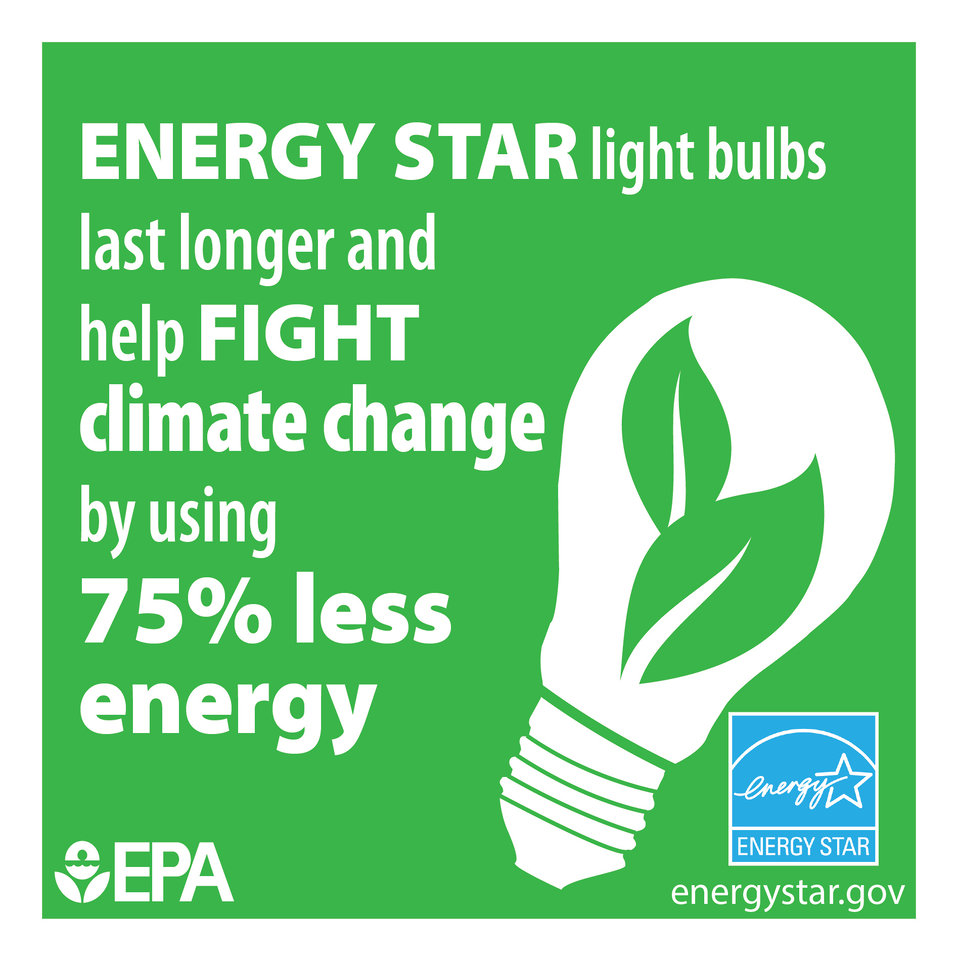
Change Light Bulbs

When it comes to saving energy, every little bit counts. Change your light bulbs to energy efficient bulbs and start making a difference today.